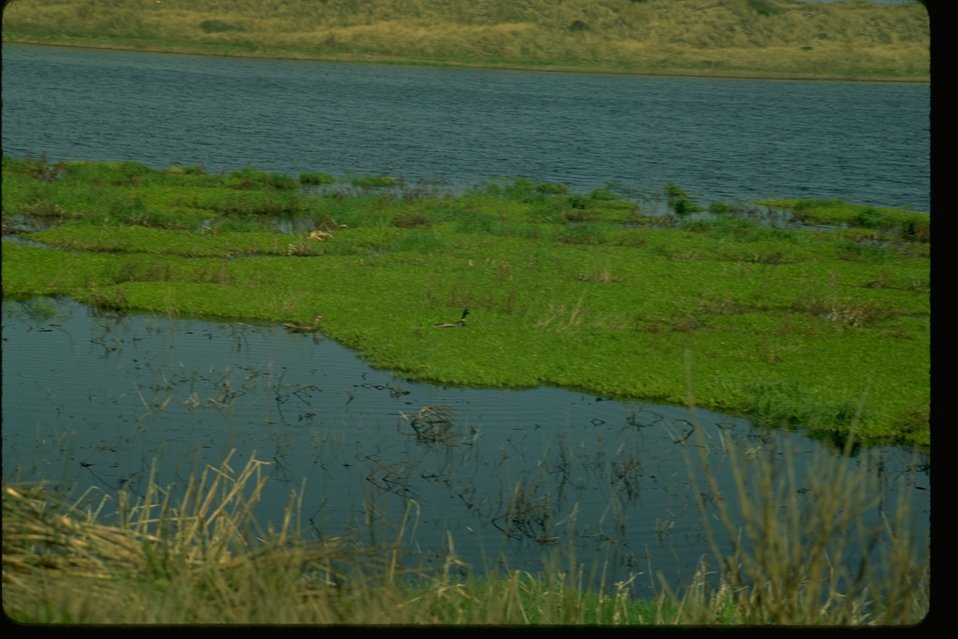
Ducks at North Spit.